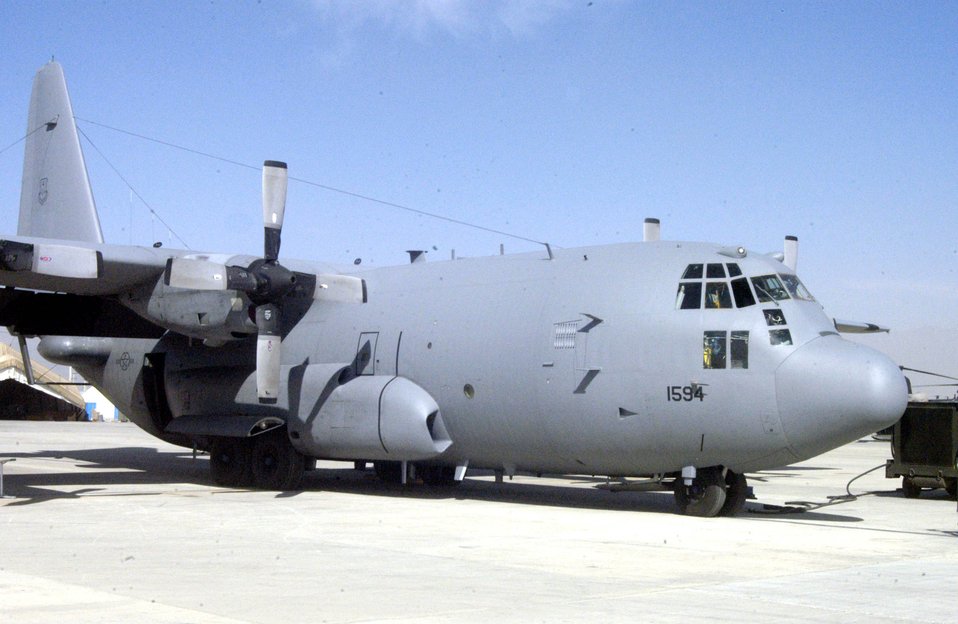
Compass Call

An EC-130H Compass Call sits on the flightline at Bagram Air Base, Afghanistan, while maintainers perform a routine check. The 41st Expeditionary Electronic Combat Squadron aircrew members have flown more than 5,000 combat hours in support of the war on terrorism. The aircraft and members from the squadron are deployed from Davis-Monthan Air Force Base, Ariz.